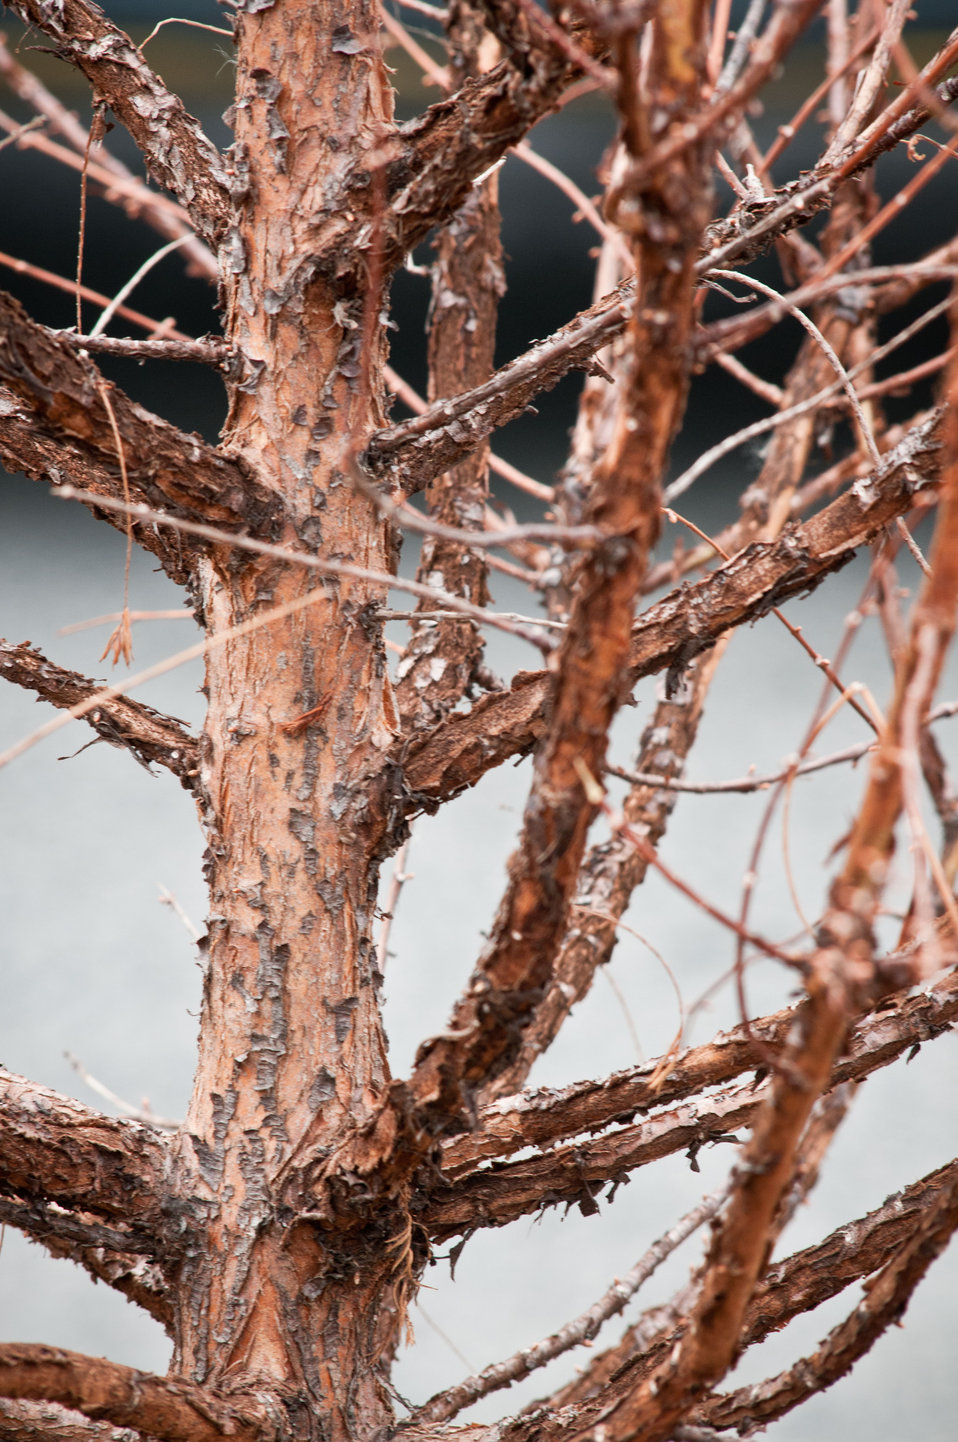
A freshly planted Dawn Redwood for the Celebration of Tu B’Shevat “The New Year of the Trees” event on the District of Columbia western lawn, next to the United States Department of Agriculture (USDA) Headquarters, Whitten Building at 14th Street and Independence Ave SW, in Washington, D.C. on Wednesday, February 8, 2012.